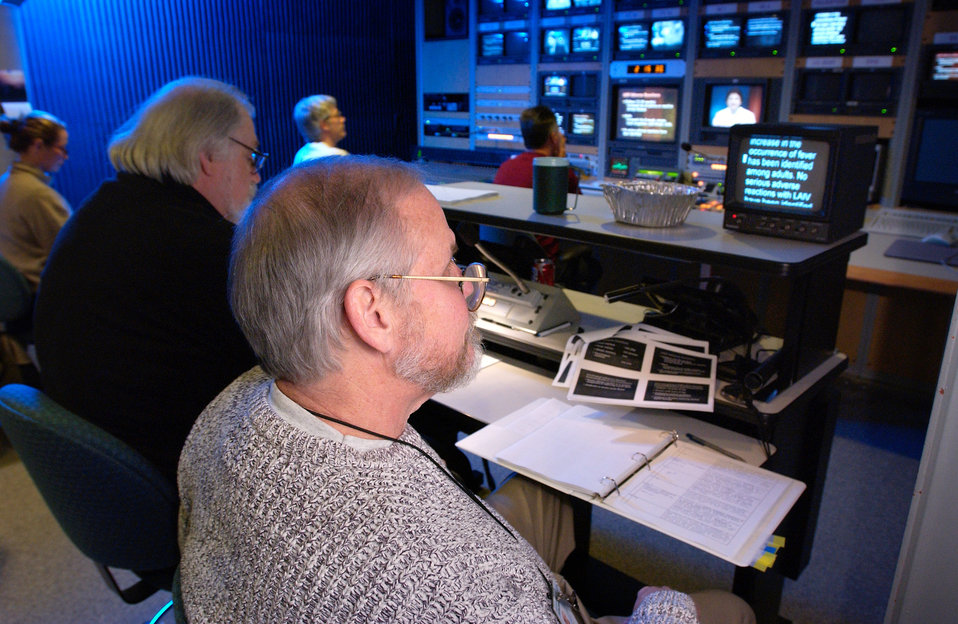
This photograph showed Division of Creative Services (DCS), Editor/Director Ron Bartlett (left), and Audio Visual Production Specialist Larry Thomas, at work in the CDC's TV control room during a live broadcast.